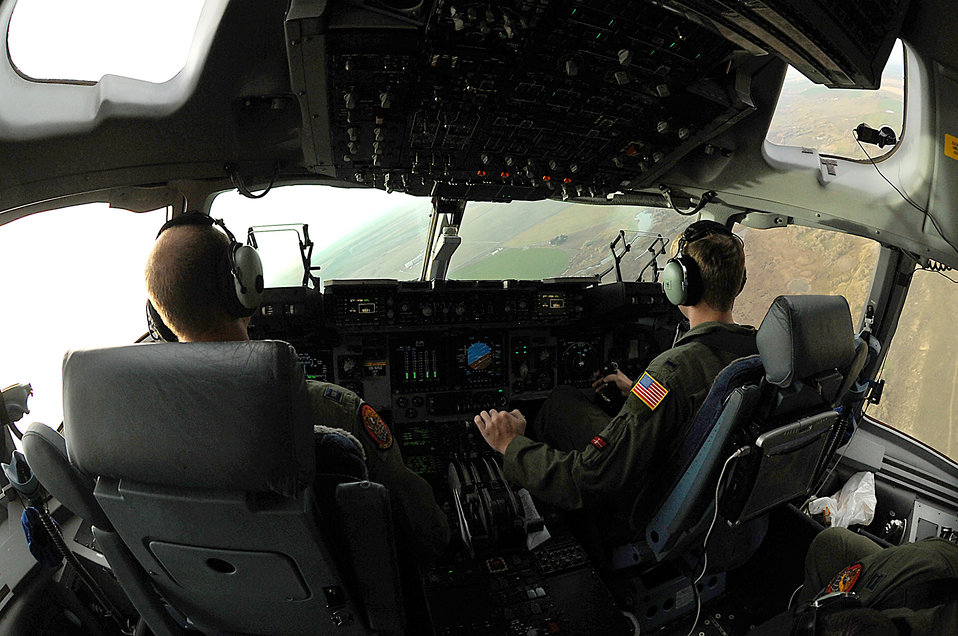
Hickam aircrew

Members of a 535th Airlift Squadron C-17 Globemaster III aircrew participate in a flight above the Pacific Northwest as part of a training mission Nov. 13, 2010, at Joint Base Lewis-McChord, Wash. The aircrew trained in unrestricted-descent assault landings, airdrop, combat offloads, air refueling, night-vision-goggle training, low levels, mountainous terrain, assault landings, threat responses and multiple-ship formation training.